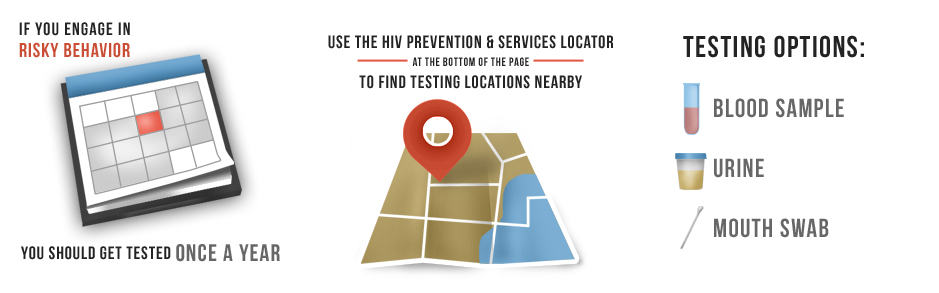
testing